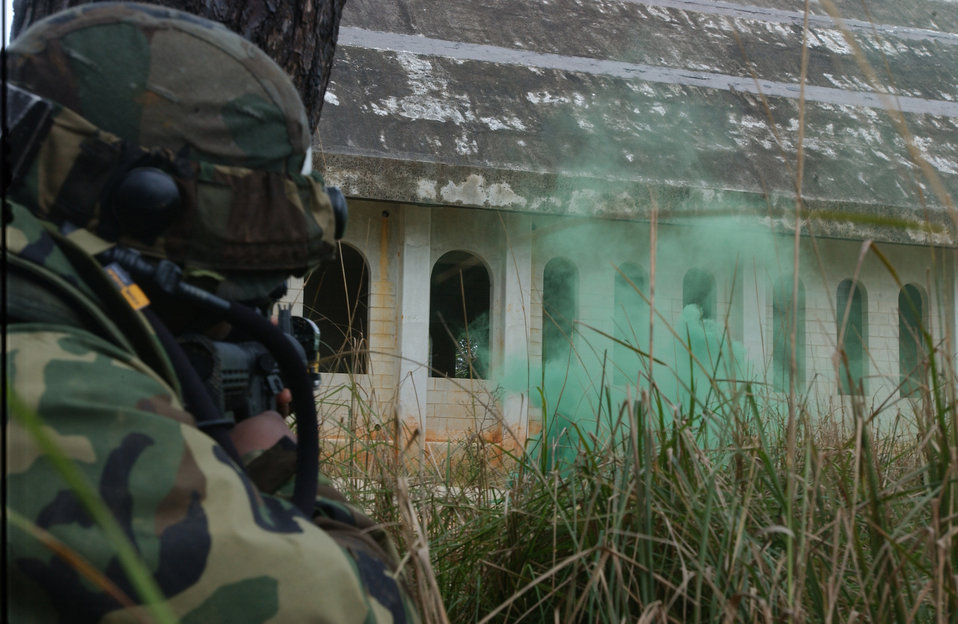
Scoping the enemy

CAMP SCHWAB, Japan -- Senior Airman Kimwa Edwards watches for enemy movement during an urban warfare field training exercise here Feb. 18. He is a security forces Airman with the 18th Security Forces Squadron.